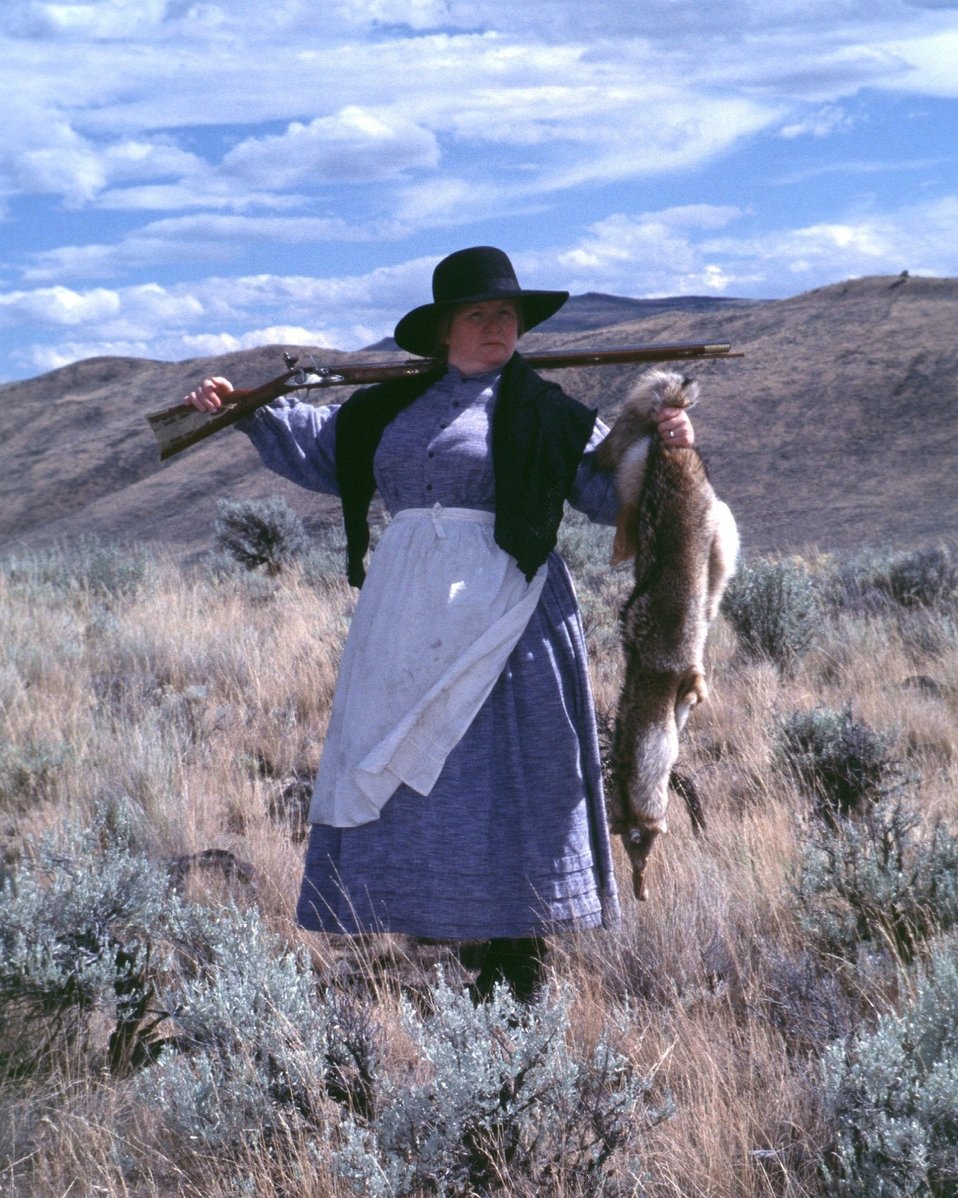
Nancy Harms portrays a woman pioneer with a rifle and a coyote pelt.